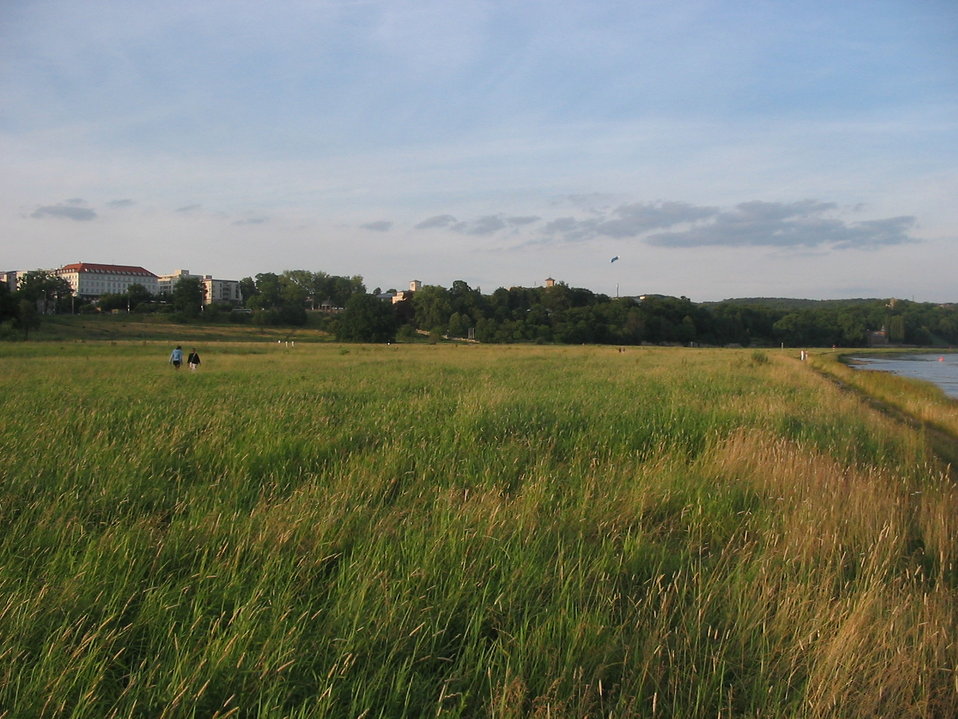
Die Elbwiesen in Dresden unterhalb des Waldschlösschens. Deutsch: Dresdner Elbufer; links im Bild das Brauhaus am Waldschlößchen